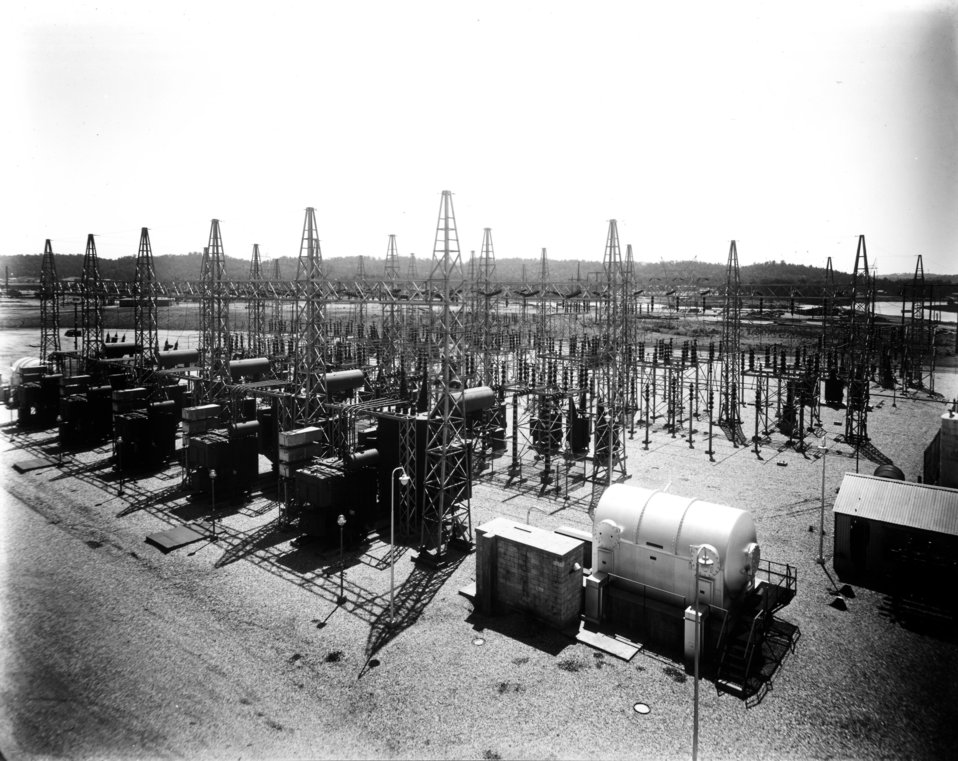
K-27 at Oak Ridge